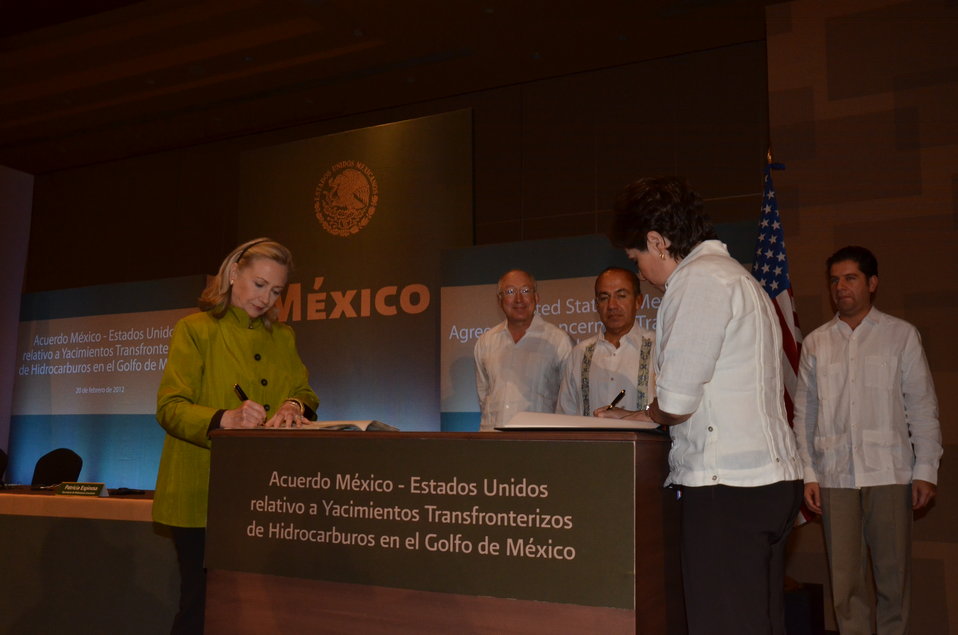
Secretary Clinton and Mexican Foreign Minister Espinosa Sign the U.S.-Mexico Agreement Concerning Transboundary Hydrocarbon Reservoirs in the Gulf of Mexico

U.S. Secretary of State Hillary Rodham Clinton and Mexican Foreign Minister Patricia Espinosa sign the U.S.-Mexico Agreement Concerning Transboundary Hydrocarbon Reservoirs in the Gulf of Mexico, in Los Cabos, Mexico, on February 20, 2012. Also pictured in the photo, left to right, are: U.S. Interior Secretary Ken Salazar, Mexican President Felipe Calderon, and Mexican Secretary of Energy Jordy Herrera.